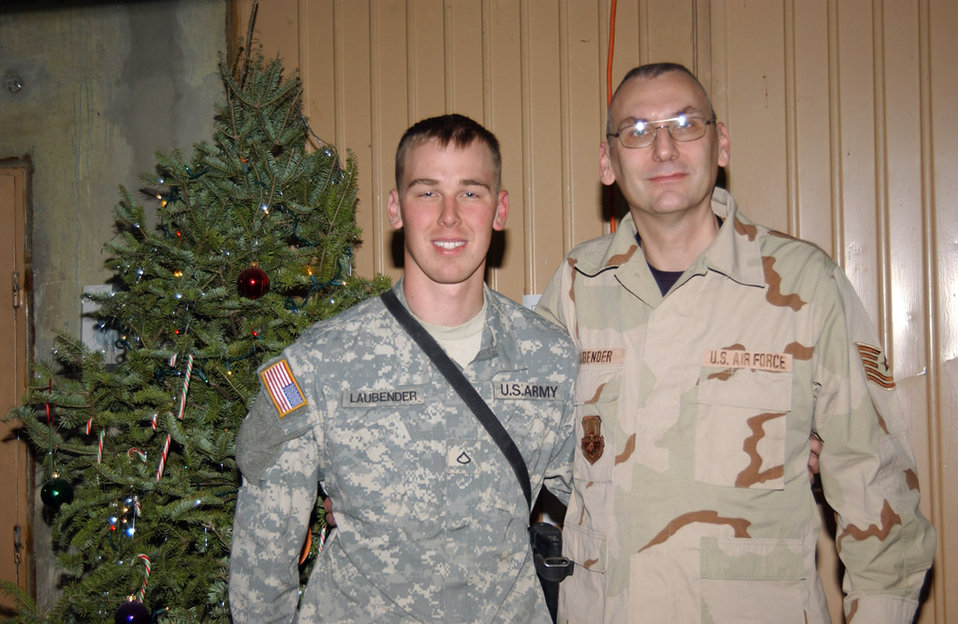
Spending Christmas together

BALAD AIR BASE, Iraq (AFPN) -- Private 1st Class Andy Laubender arrived here Christmas Eve where he had a chance to spend the holidays with his father Tech. Sgt. Craig Laubender. Private Laubender is with the 4th Infantry Division and his father is with the 332nd Expeditionary Logistics Readiness Squadron.